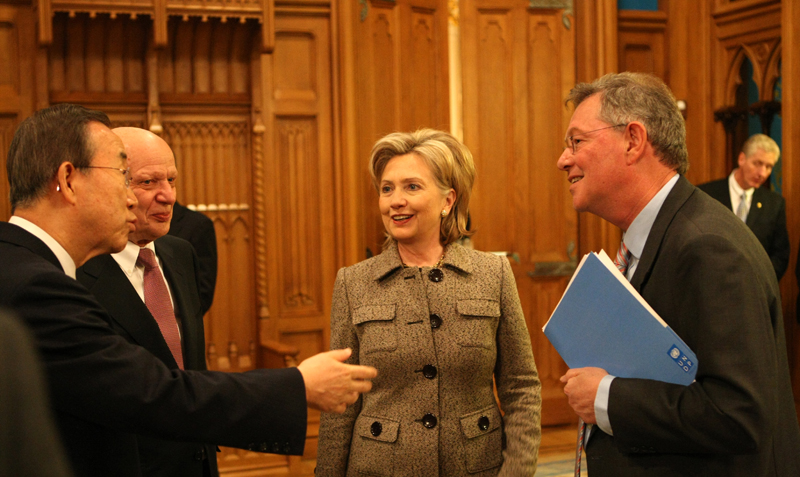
Secretary Clinton Speaks With UN Secretary-General Ban

U.S. Secretary of State Hillary Rodham Clinton speaks with U.N. Secretary-General Ban Ki-moon after the Quartet dinner in Moscow at the Osobnyak of the Ministry of Foreign Affairs, Moscow, Russia March 18, 2010.